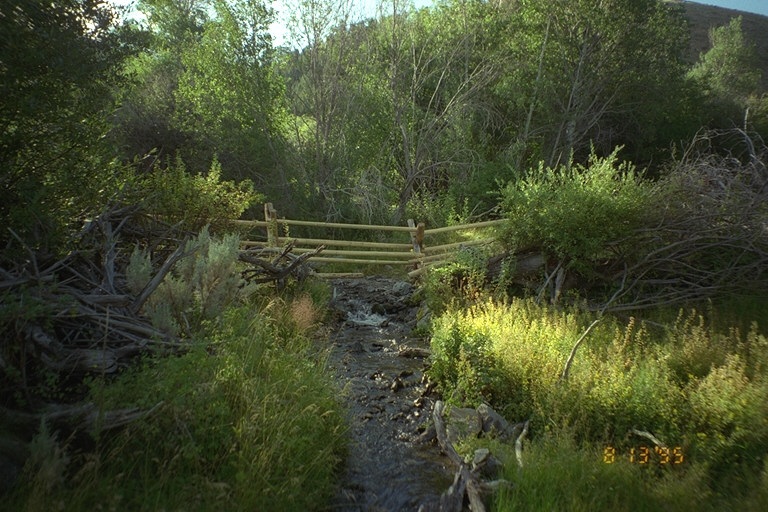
Riparian area Public Lands Salmon Field Office UCSC Upper Columbia Salmon Clearwater District